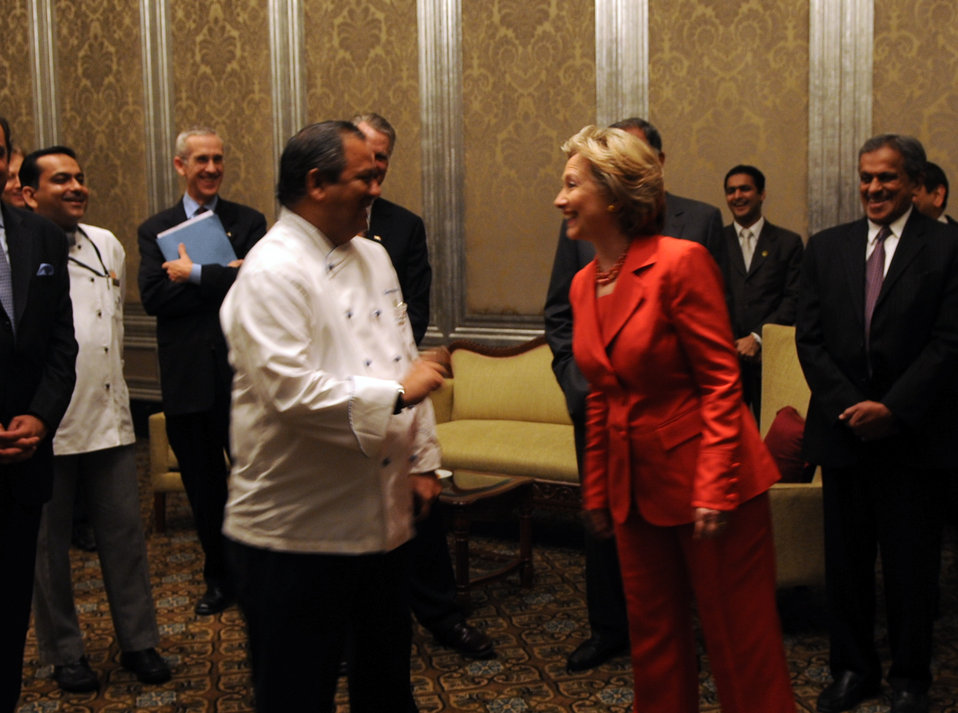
Secretary Clinton Greets Hero of Taj Mahal Palace Hotel Attacks

U.S. Secretary of State Hillary Rodham Clinton shares a joke with Hemant Oberoi, head chef at the Taj Mahal Palace Hotel and one of the heroes of the November 26, 2008 attacks in Mumbai, India July 18, 2009.